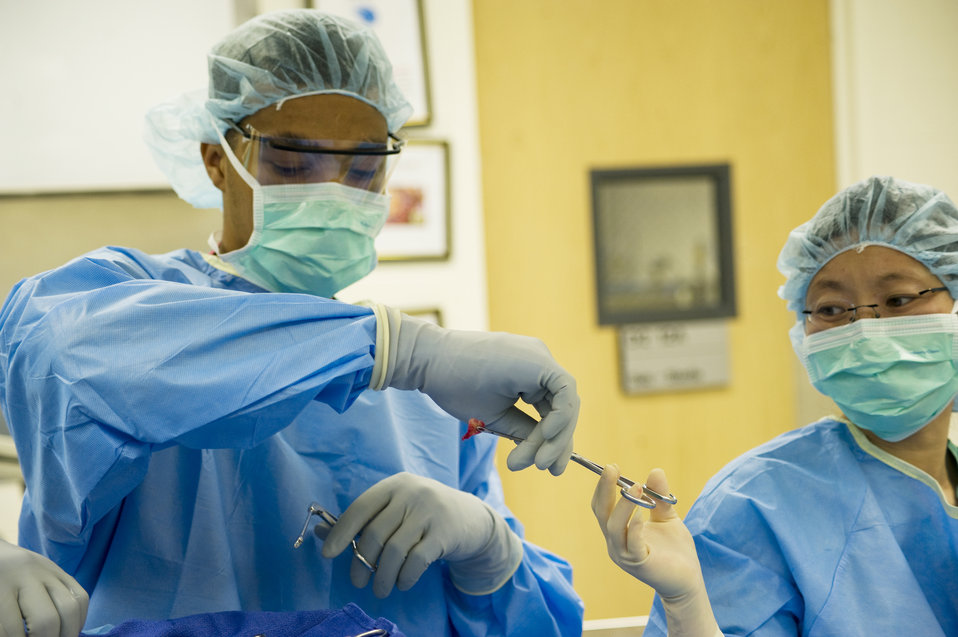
Ambulatory Surgery Clinic

Airman 1st Class Eli Hedberg, 779th Surgical Operations Squadron otolaryngologist technician, receives a sinus tissue specimen from Dr. Carrie Flanagan, 779 SGC staff, otolaryngologist, during an endoscopic sinus surgery. The specimen will be sent to Pathology for tissue analysis and diagnosis for Dr. Flanagan.